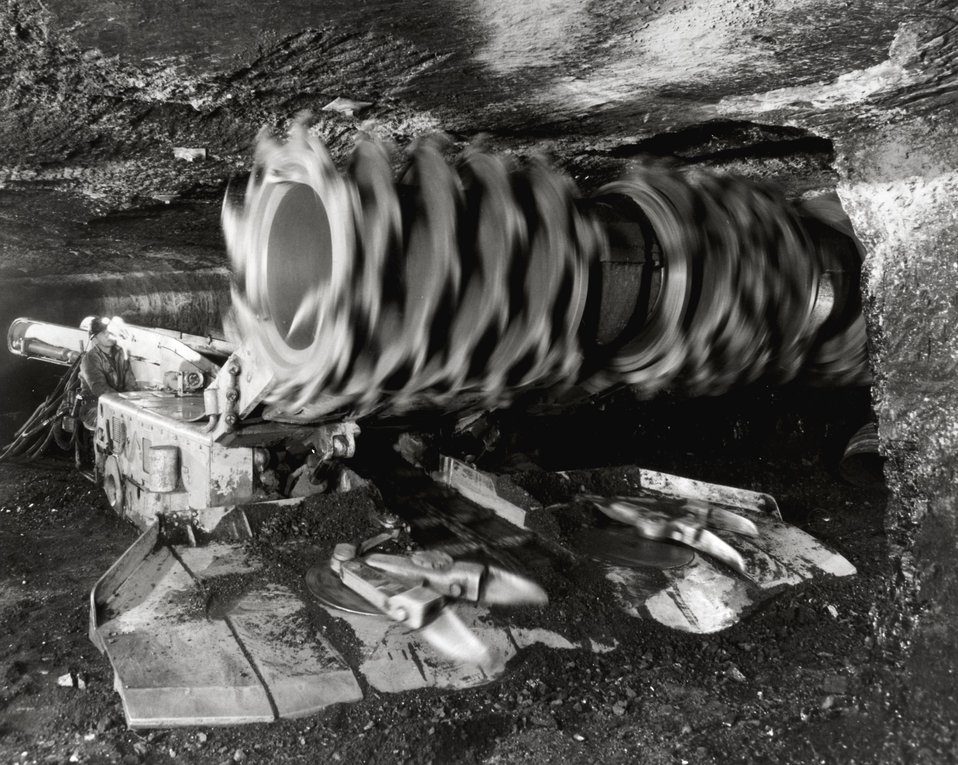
Whirling steel teeth of continuous mining machine chew coal from the face of the seam. The loosened coal drops to the floor where rotating steel arms thrust it into the 'throat' of the machine, a conveyor belt which carries the coal to the rear for loading into shuttle cars or a mine conveyor system. c. 1970